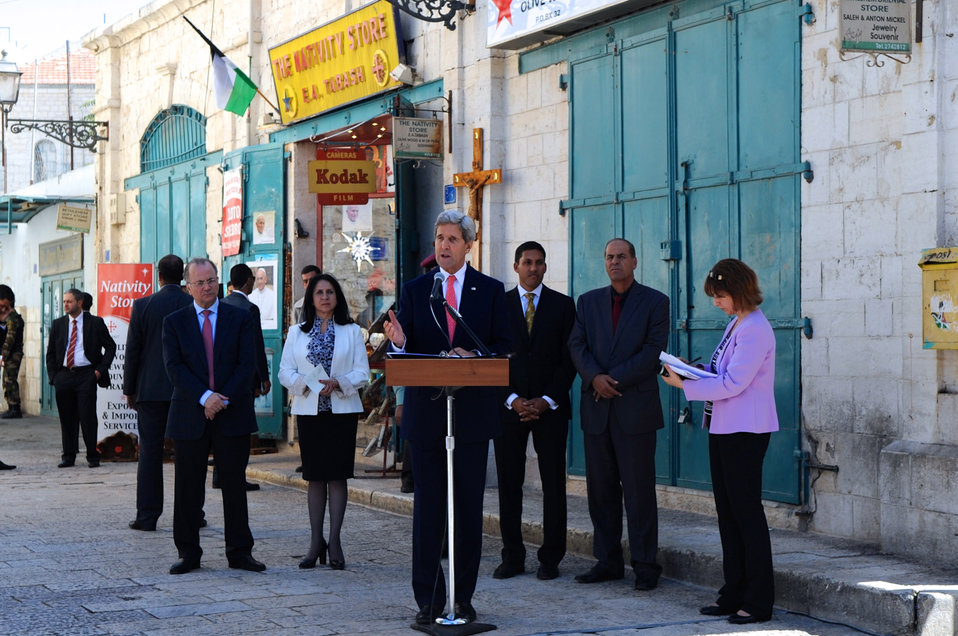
Secretary Kerry Celebrates High-Impact, Micro-Infrastructure Work During a Visit to the West Bank

U.S. Secretary of State John Kerry, joined by USAID Administrator Rajiv Shah, Bethlehem Mayor Vera Baboun, and other local officials, highlights USAID's High-Impact, Micro-Infrastructure Initiative after viewing a road-repair project just off Manger Square in the West Bank on November 6, 2013.